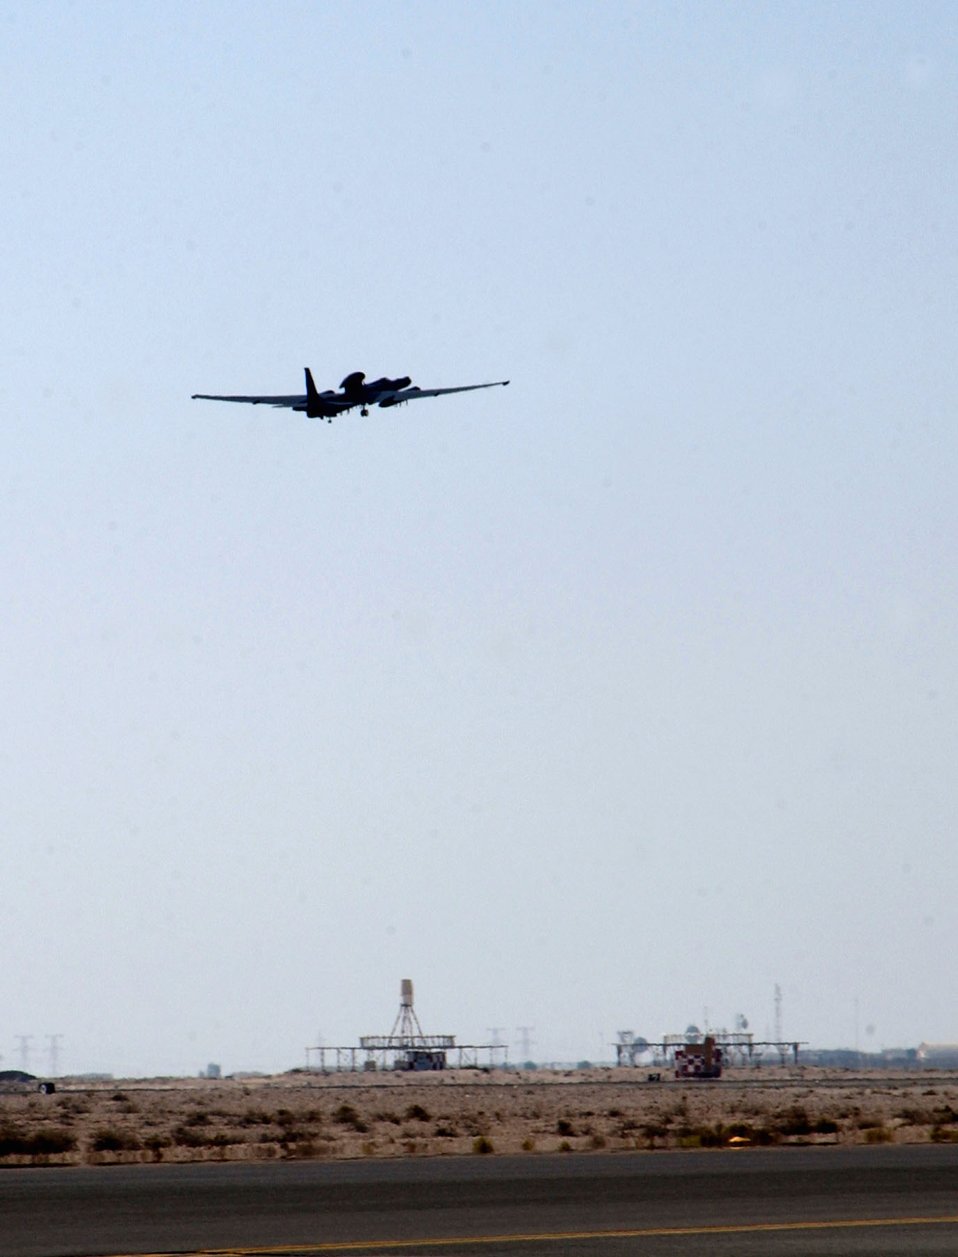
Flying high

A U-2 Dragonlady piloted by Capt. Karl Frederick lifts off from the runway at this deployed location Oct. 24. Captain Frederick, assigned to the 99th Expeditionary Reconnaissance Squadron, is part of the vital intelligence, surveillance and reconnaissance mission performed for Operations Enduring and Iraqi Freedom in Southwest Asia.